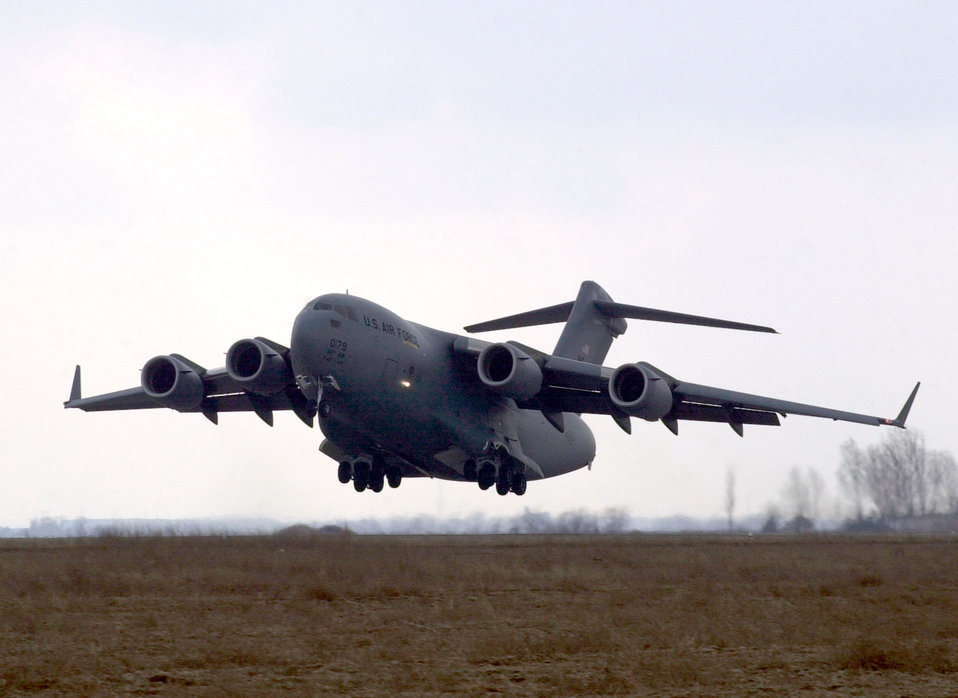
Globemaster takes flight

OPERATION IRAQI FREEDOM -- A C-17 Globemaster III takes off at Mihail Kogalniceanu Air Base, Romania, in support of Operation Iraqi Freedom. The 458th Air Expeditionary Group is currently maintaining an airbridge at the base to transport supplies and people to the Central Command Area of Responsibility.